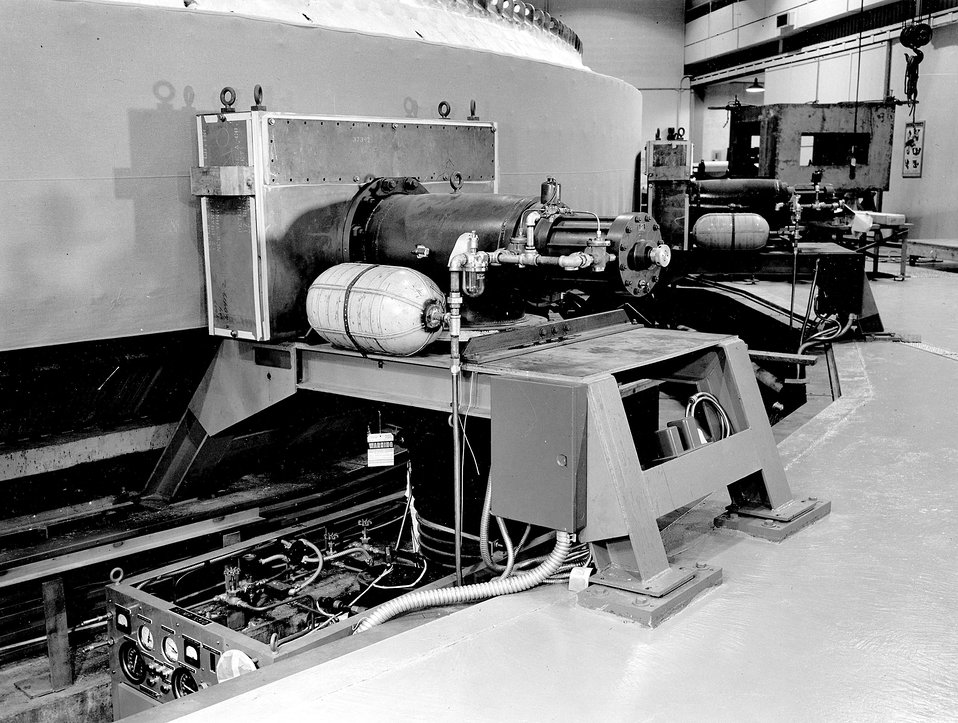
Sixteen-inch vacuum valve and plenum chamber connecting
twenty-inch oil diffusion pump to Cosmotron vacuum chamber.